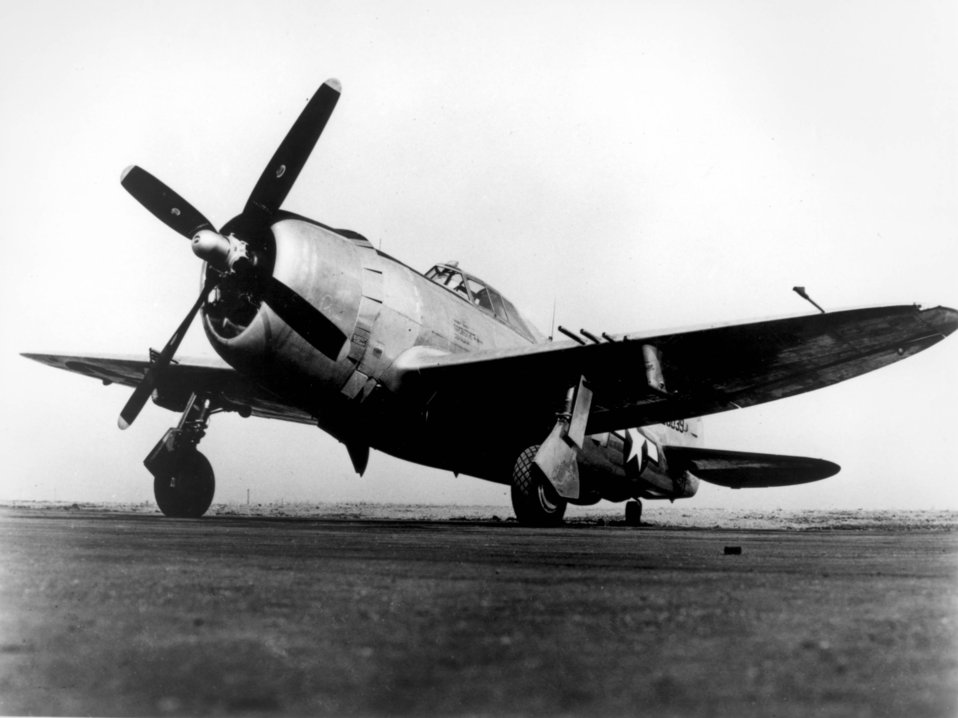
P-47 Thunderbolt

1940's -- Affectionately nicknamed